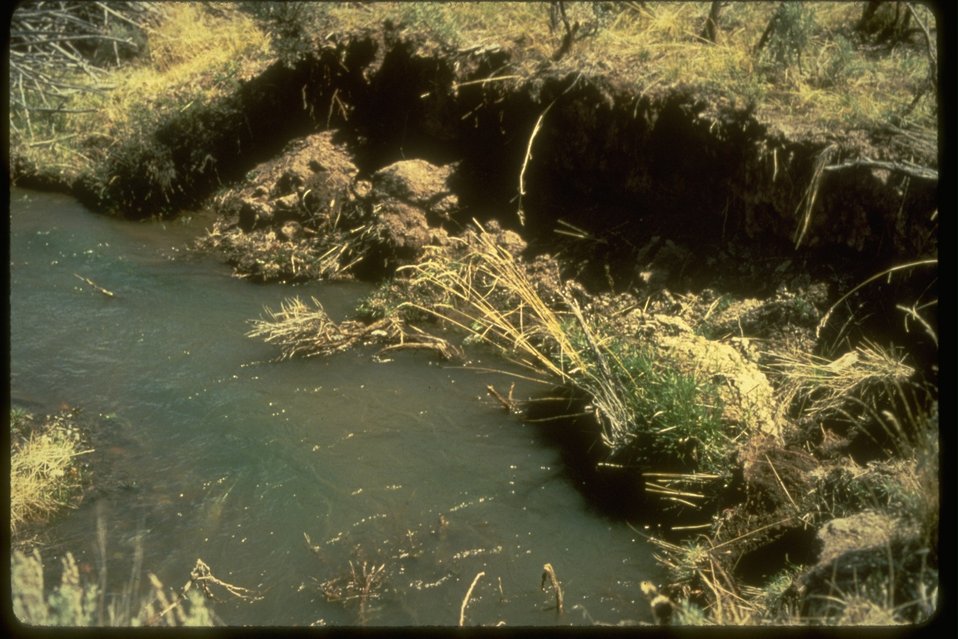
Bank sloughing.